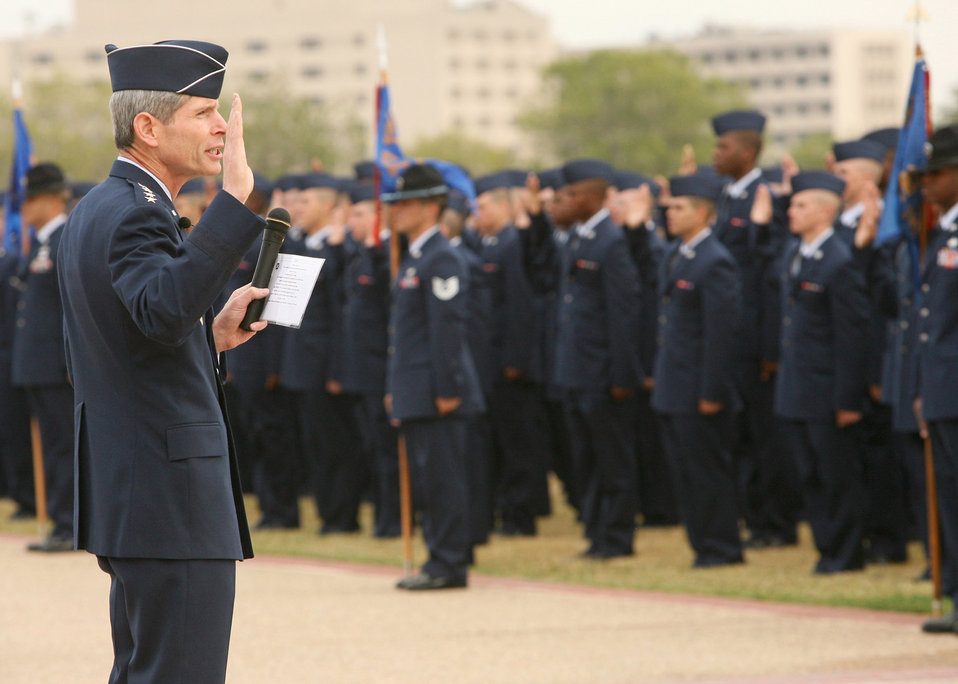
Chief of staff reviews parade

Gen. Norton Schwartz administers the oath of enlistment to Air Force Basic Military Training graduates Oct. 31 at Lackland Air Force Base, Texas. General Schwartz is the Air Force chief of staff.